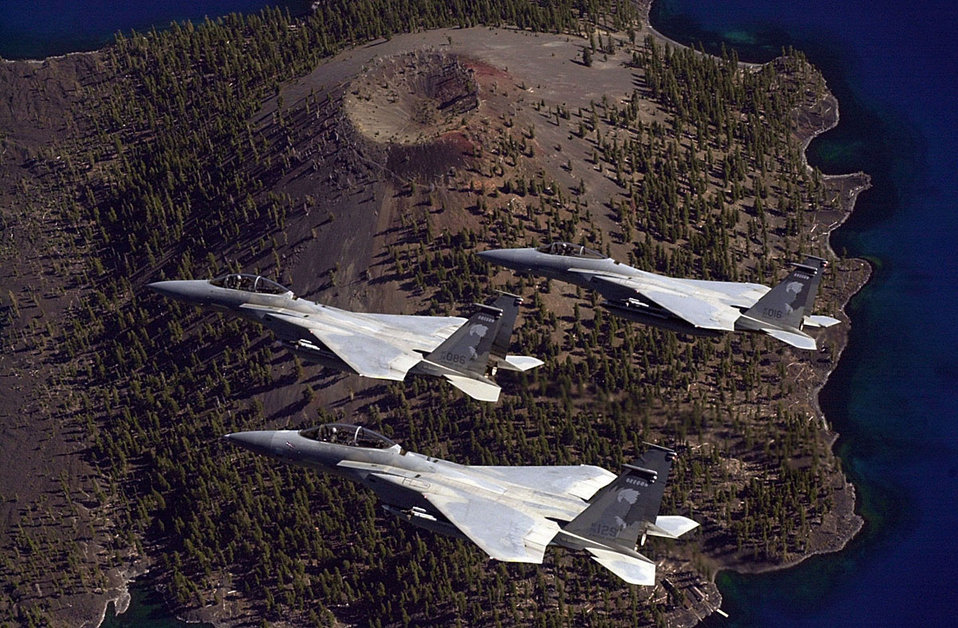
Crater Lake run

CRATER LAKE NATIONAL PARK, Ore. -- F-15s from the 114th Fighter Squadron, Kinglsey Field Air National Guard Base, Klamath Falls, Ore., fly in formation over Crater Lake National Park. The 114th FS trains Air National Guard pilots to fly the F-15.